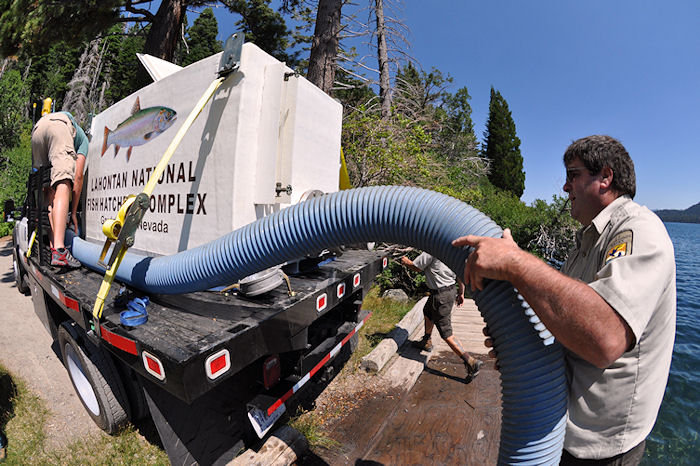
Lahontan cuttroat trout stocking in Tahoe basin area

Stocking more than 8,000 Lahontan cutthroat trout in Fallen Leaf Lake, Tahoe Basin, Calif., September 10, 2010.